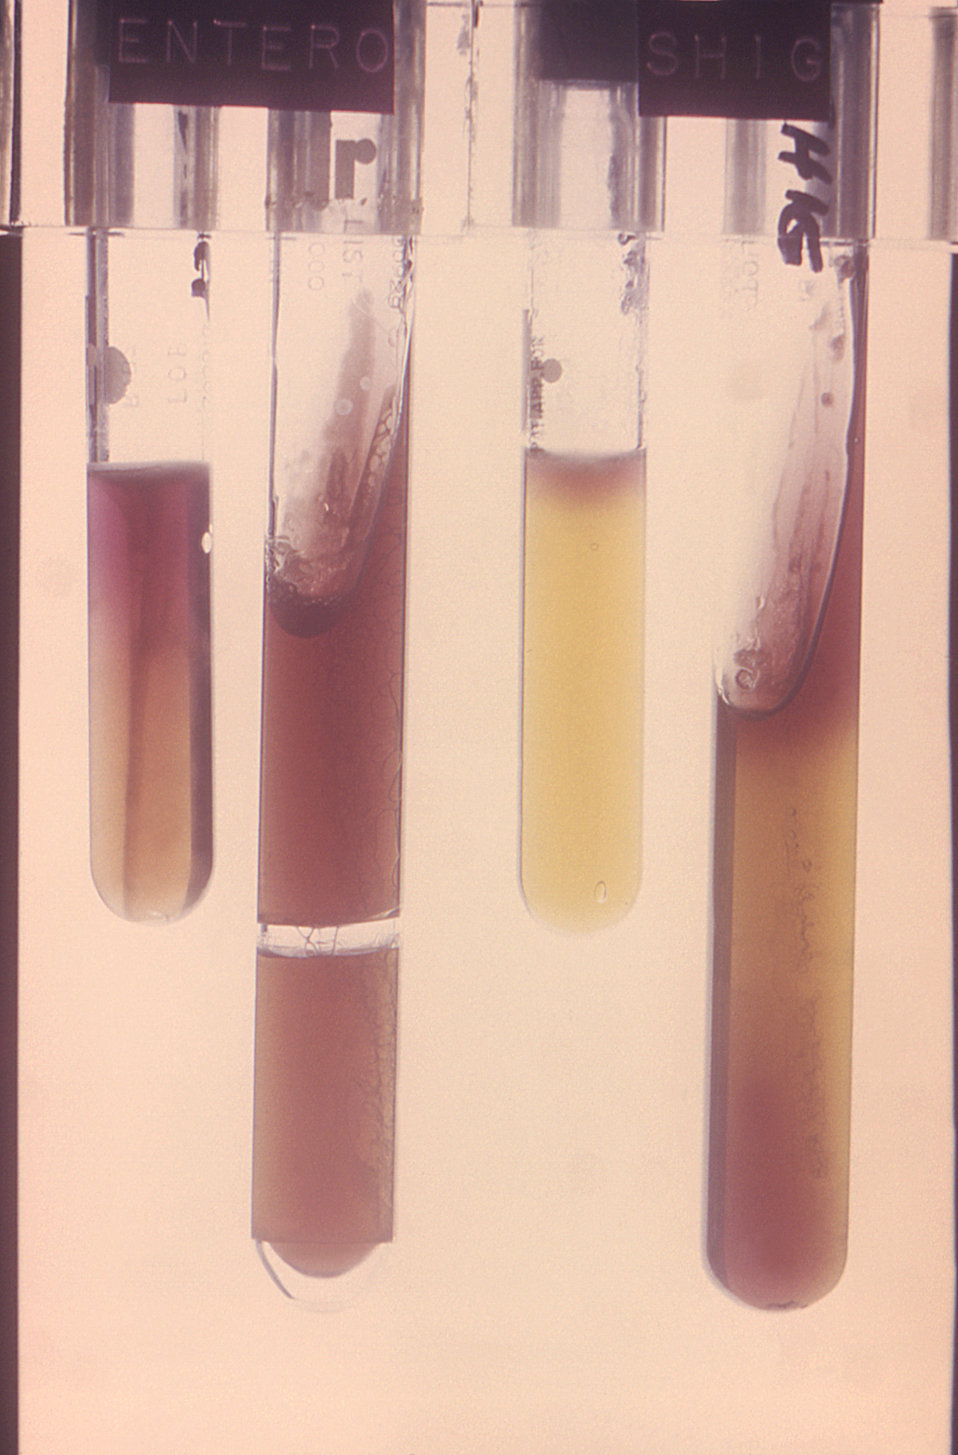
Used in the identification of Enterobacteriaceae bacteria, this image depicts four test tubes used in a Diagnostic Research, Inc., R/B Enteric Differential System test. In this particular view, Enterobacter sp. bacteria were tested alongside Shigella sp. organisms.